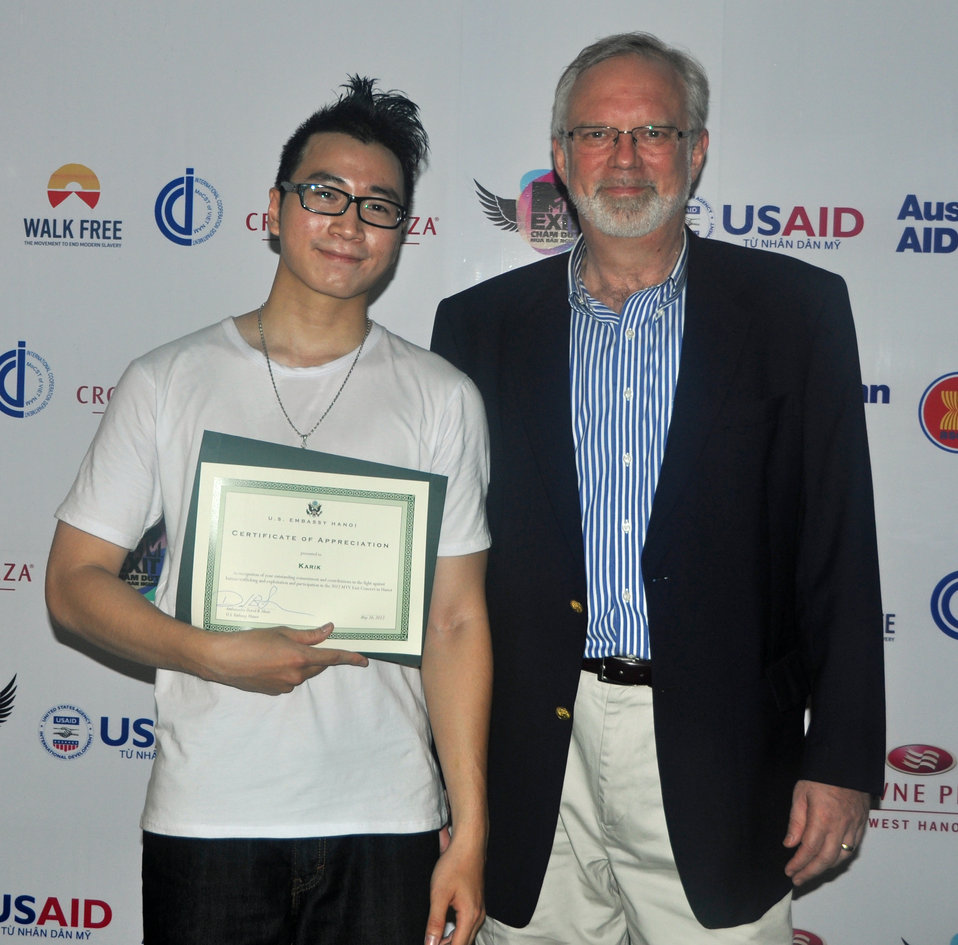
U.S. Ambassador David Shear presents Vietnamese rapper, Karik, with a certificate of appreciation for taking parting in the MTV EXIT concert against human trafficking and exploitation

USAID supports MTV EXIT concert against human trafficking and exploitation, May 26, 2012